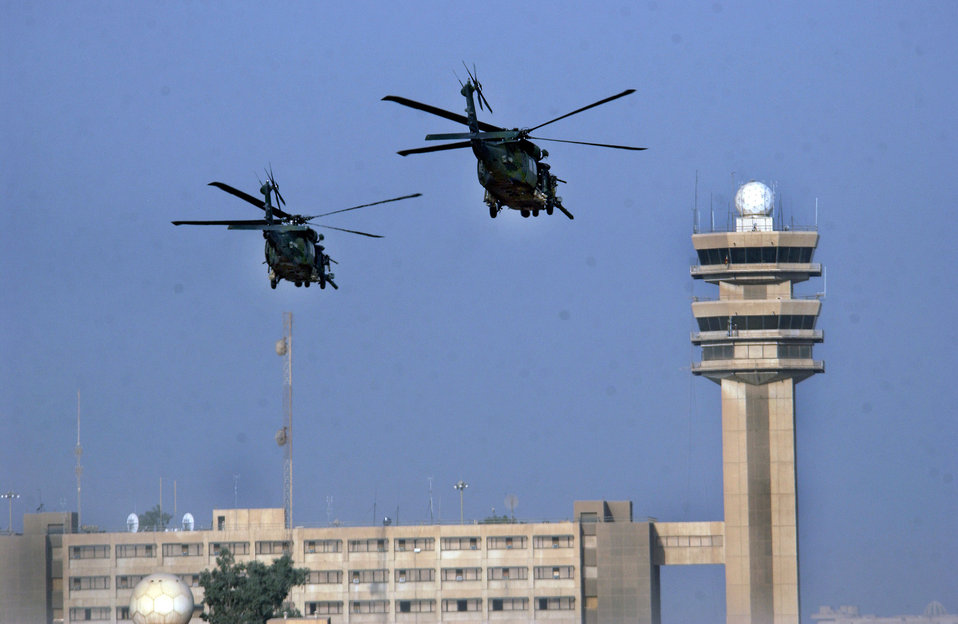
Ready to help

BAGHDAD INTERNATIONAL AIRPORT, Iraq -- Two HH-60 Pave Hawks from the 101st Expeditionary Rescue Squadron here fly toward downtown Baghdad in response to the bombing of the Baghdad Hotel on Oct. 12. The pararescuemen and aircrew members aboard are deployed from the New York Air National Guard.